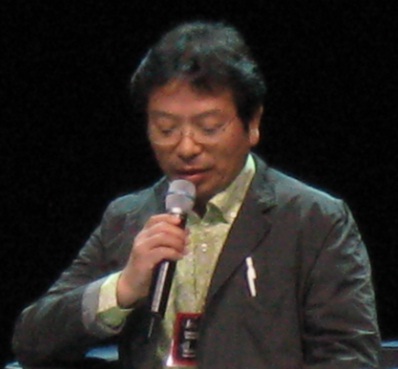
Mangaka Yoshihiro Takahashi being interviewed in Tracon VI convention, Tampere Hall, Finland. Suomi: Mangaka Yoshihiro Takahashi haastattelussa Tracon VI -tapahtumassa, Tampere-talo, Suomi.